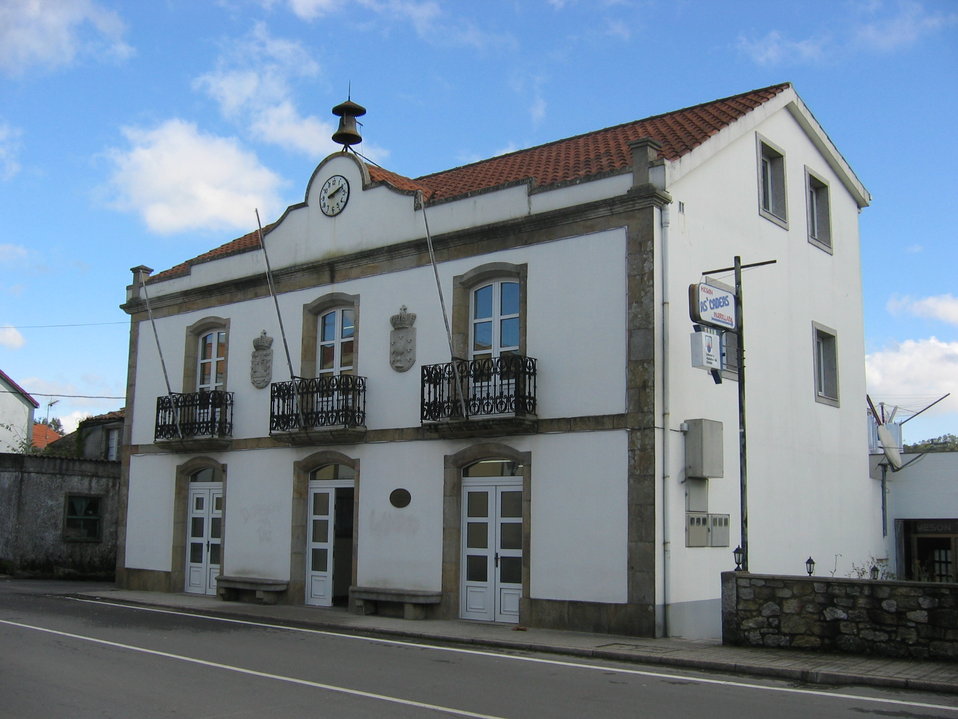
Galego: Casa do Concello da Baña.